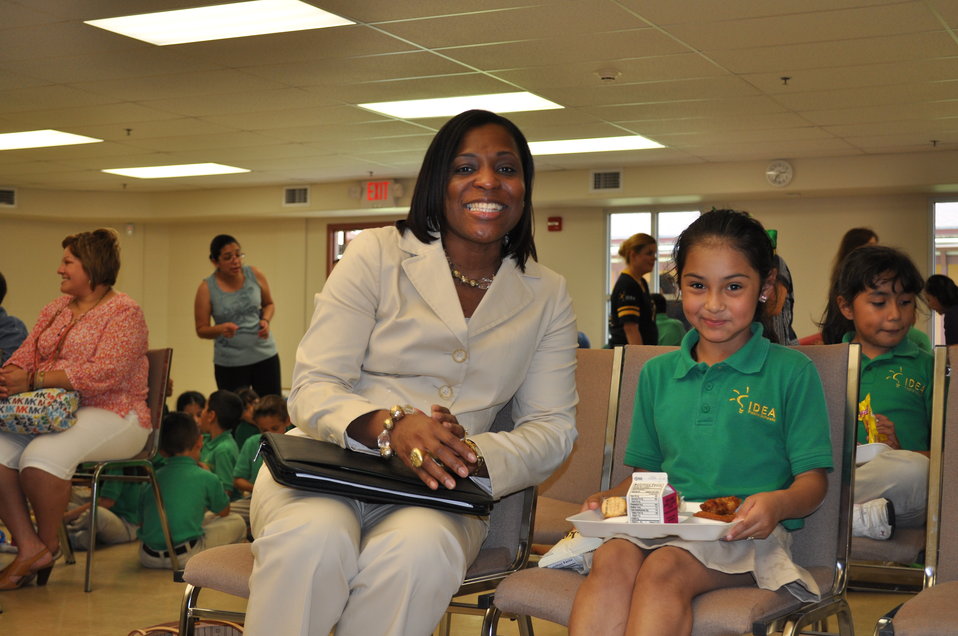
U.S. Department of Agriculture’s (USDA) Southwest Region management specialist DeAdrian Maddox sits with a child at the Summer Food Service Program (SFSP) kick off ceremony at the Basilica of Our Lady of San Juan Del Valle, TX on May 24, 2012. The SFSP is a federally funded program that is administered by the states in which they reimburse organizations for meals served to children during the summer months.